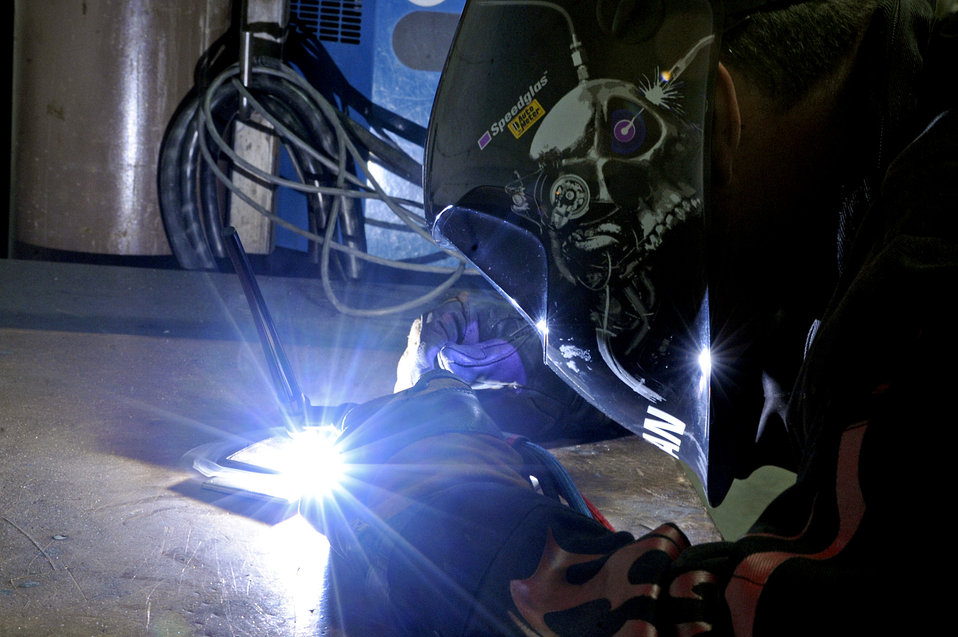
Let the sparks fly

Airman 1st Class Travis Webb, with the 28th Maintenance Squadron, performs tungsten inert-gas welding on a piece of stainless steel, July 16, 2010, at Ellsworth Air Force Base, S.D. TIG welding is a precise form of welding that can be performed on a variety of metals.